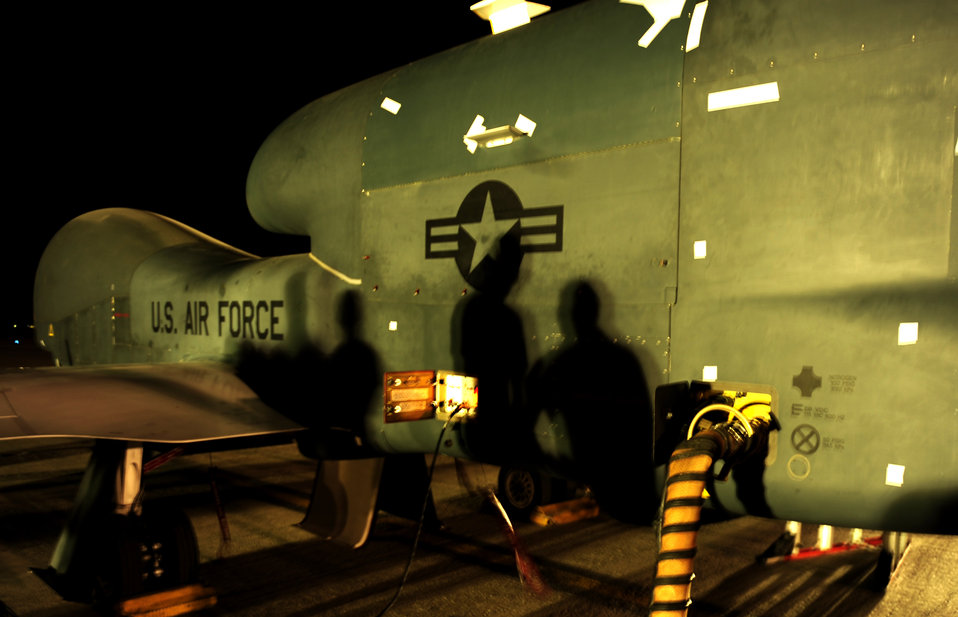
Global Hawk prepares for flying mission

A crew of maintenance technicians prepare an RQ-4 Global Hawk for a mission while deployed Nov. 23, 2010, at an air base in Southwest Asia. The RQ-4 and Airmen are assigned to the Expeditionary Operations Group.